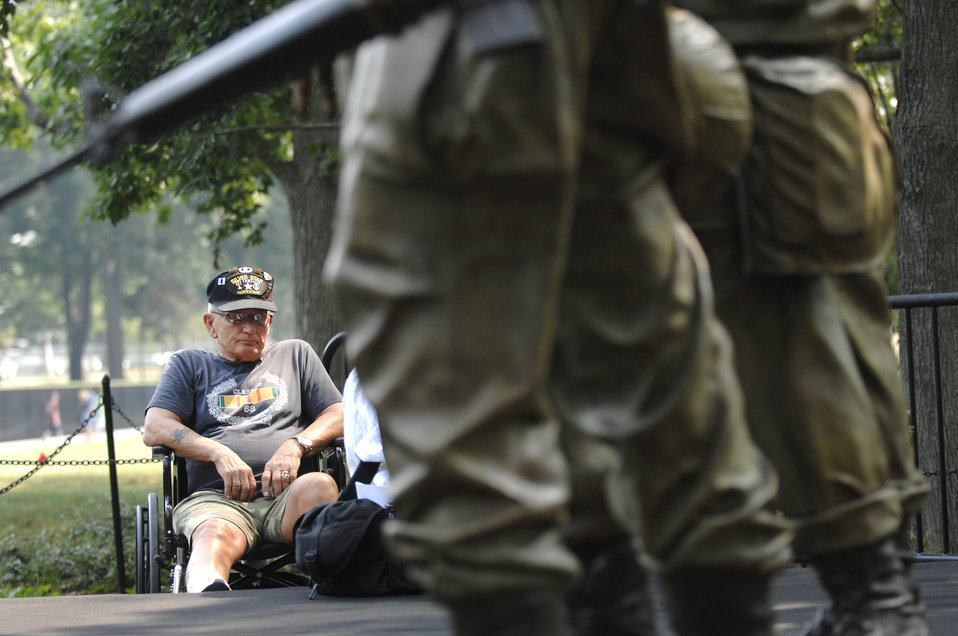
Restoration complete for Vietnam War Memorial statue

Retired Marine Capt. Ronald E. Hoover Sr. admires the Three Servicemen Statue on the National Mall in Washington, D.C., July 8, 2010. The statue, which was unveiled in 1984, was rededicated after six weeks of restoration work. Captain Hoover, a native of Carlisle, Pa., served two tours in Vietnam and retired from the Marine Corps in 1974.